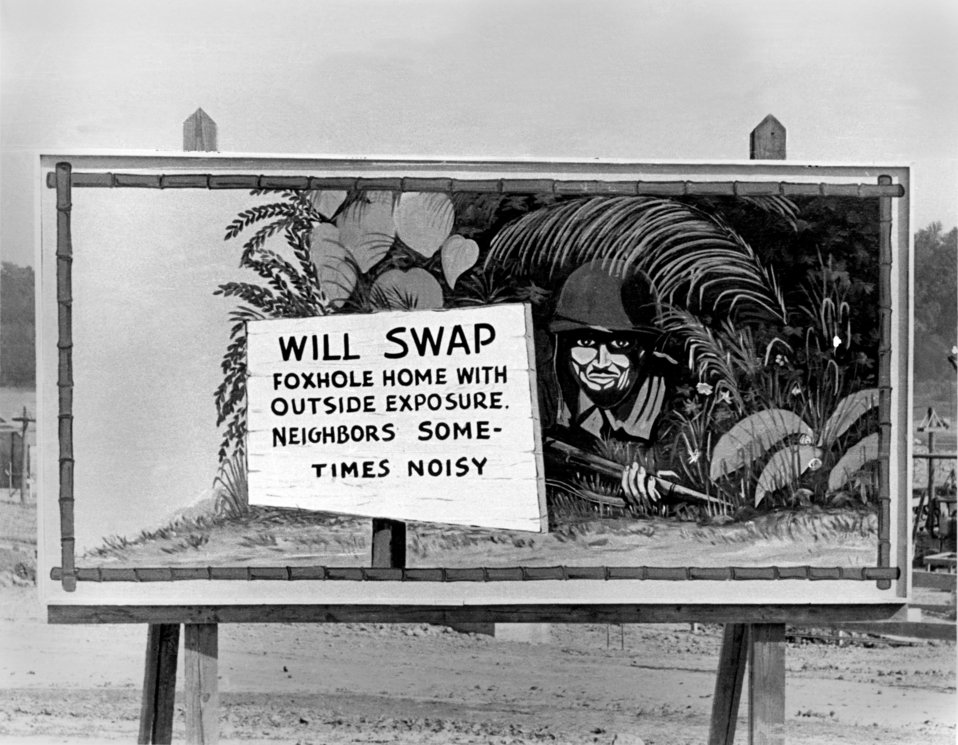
Billboard Oak Ridge During World War II

ROLL97-9 DOE photo by Ed Westcott

Billboard Oak Ridge Tennessee10/11/43